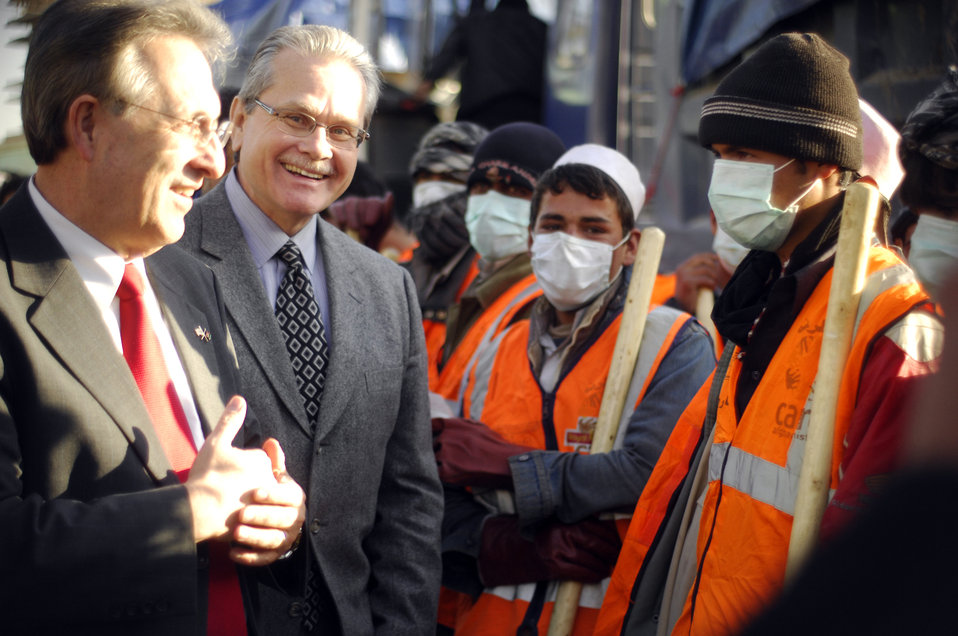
Care29